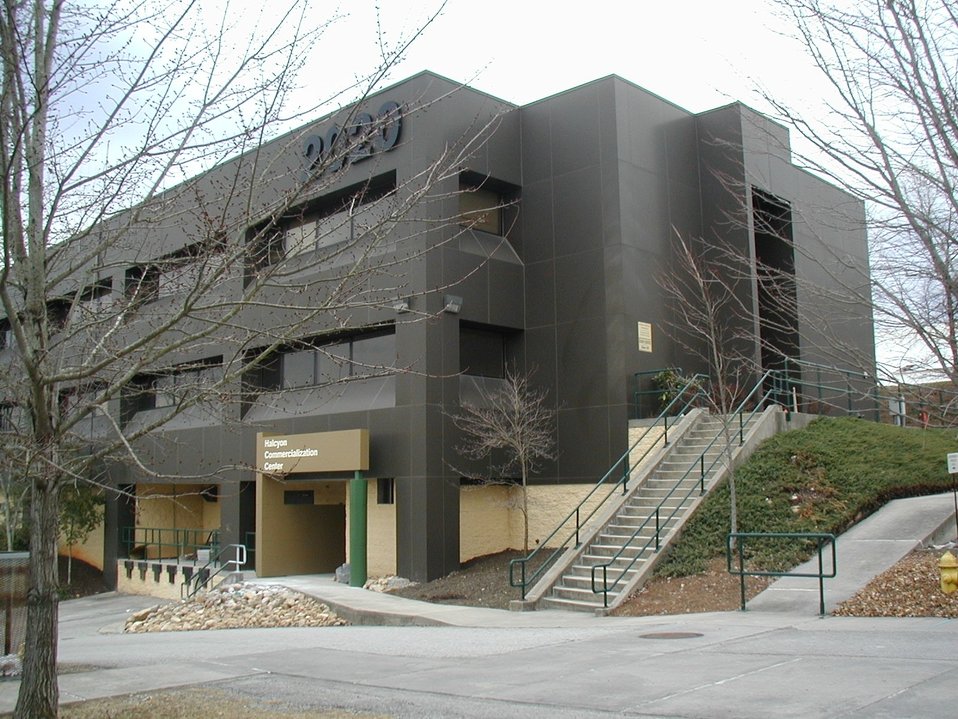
The Science and Technology Park at ORNL

New construction supports economic development in the area.